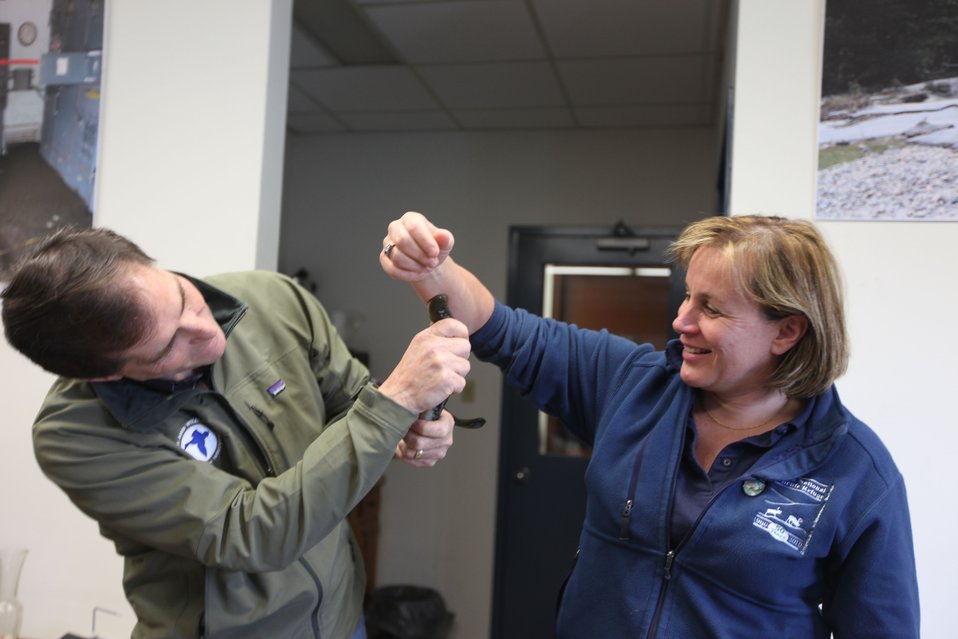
Dan Ashe, Deb Rocque and a Sea Lamprey!

U.S. Fish & Wildlife Service Director Dan Ashe visits the Northeast Region
for a tour of the White River National Fish Hatchery in Bethel, Vermont on
April 27, 2012. The hatchery was devastated by Tropical Storm Irene and
Dan Ashe had the chance to meet and thank the staff for their heroic work.
Director Ashe also visited restoration/flood response/fish passage project
sites in Rochester, Vermont and met with local officials and staff from the
White River Partnership.